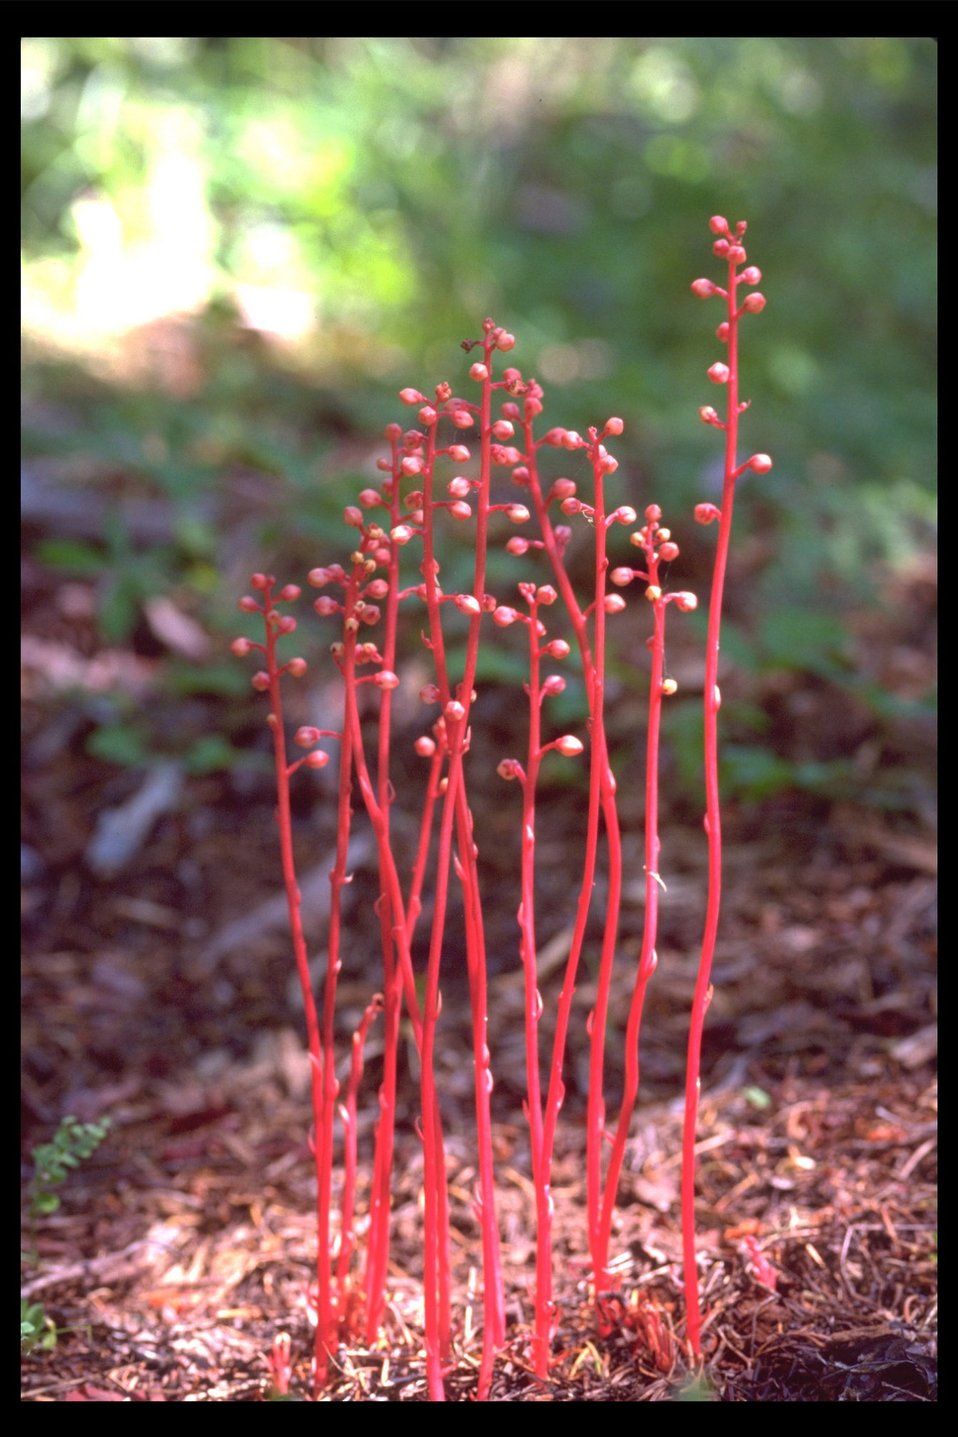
Pine-drops (Pterospora andromedea) at Upper Trail Creek.